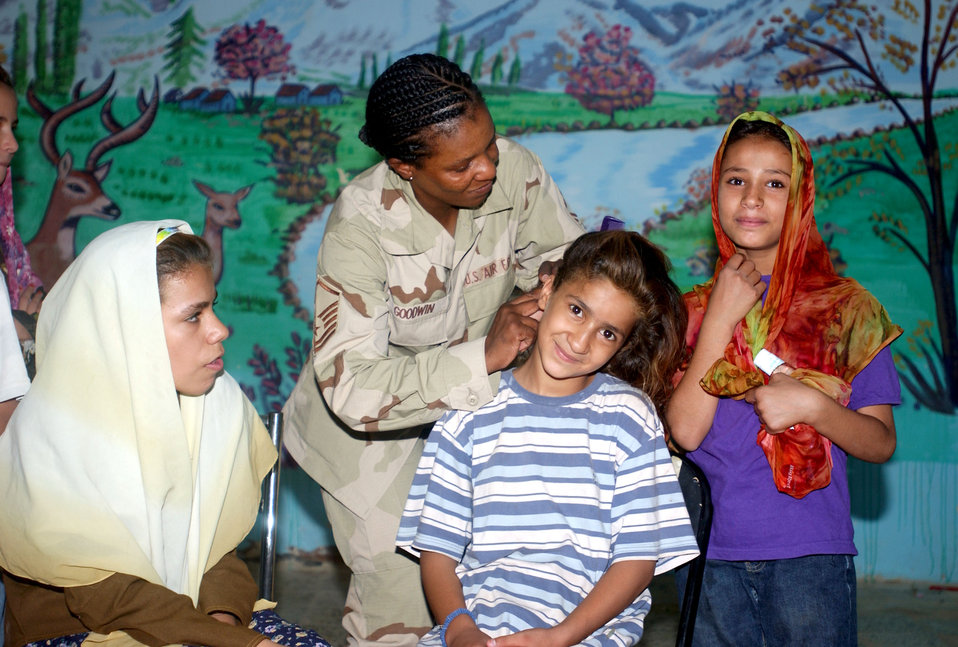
Goodwin

AN NASIRYAH, Iraq -- Master Sgt. Sylvia Goodwin fixes the hair of a child at an orphanage here Aug. 26. Goodwin is deployed to nearby Tallil Air Base supporting Operation Iraqi Freedom. Airmen and soldiers from the base go to the orphanage regularly to visit with the children, as well as give them clothes and toys.